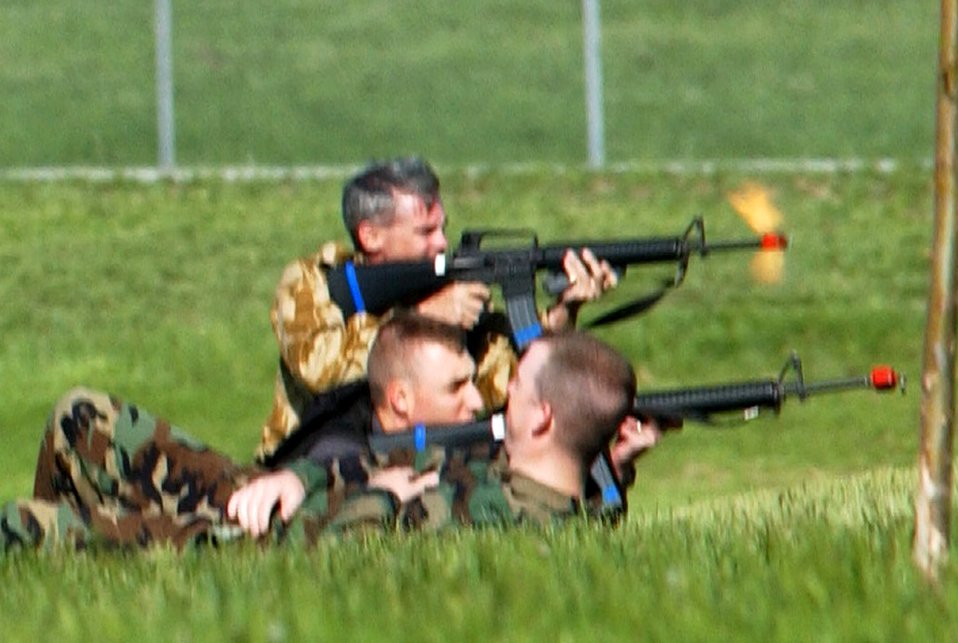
Operational readiness exercise

Airmen from the 28th Bomb Wing simulate a ground attack during an operational readiness exercise at Ellsworth Air Force Base, S.D., on Wednesday, May 24, 2006.